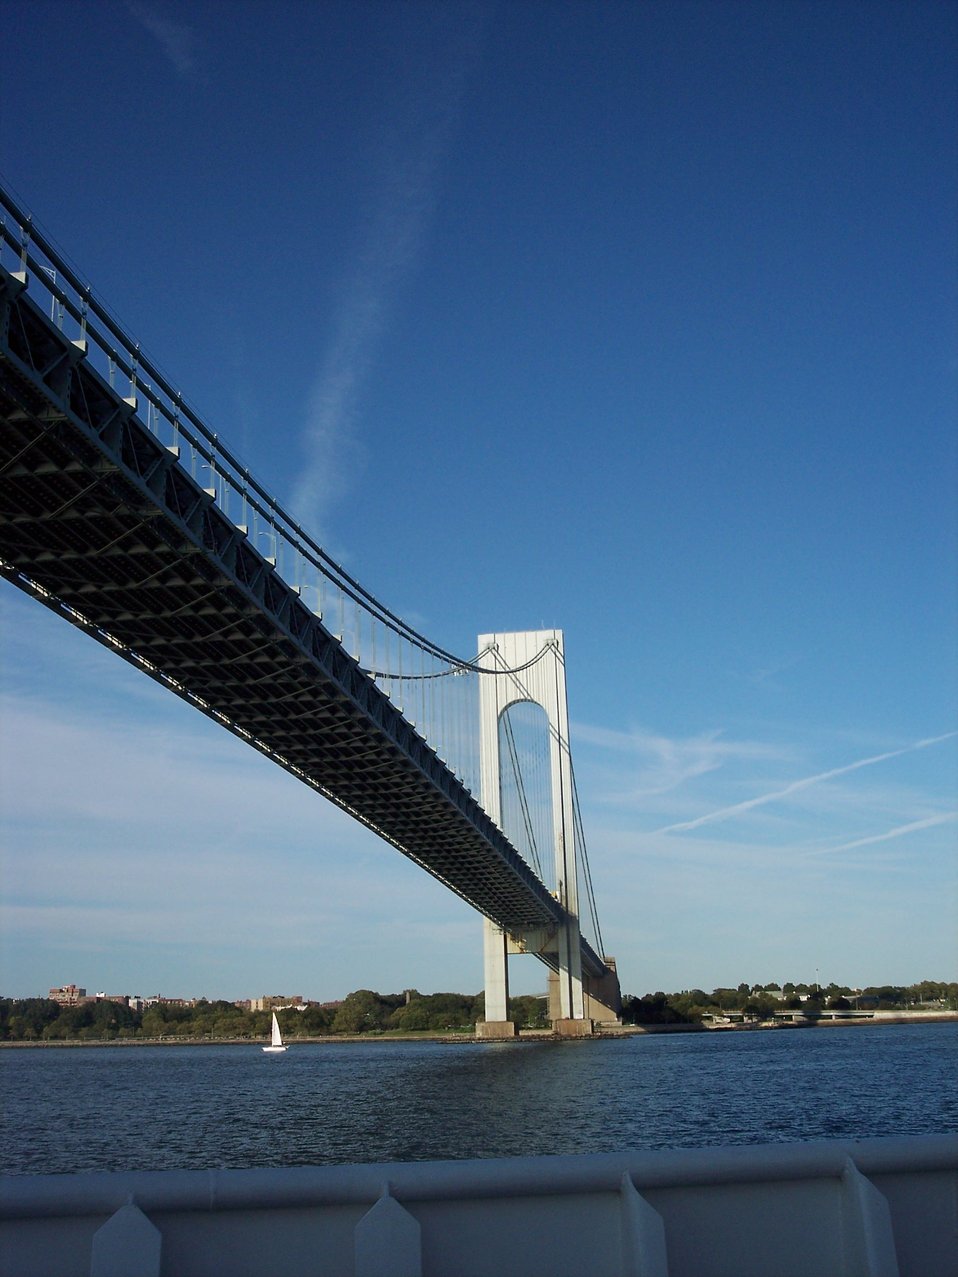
Verrazano-Narrows Bridge spanning the Hudson River looking east to the Brooklyn shore.